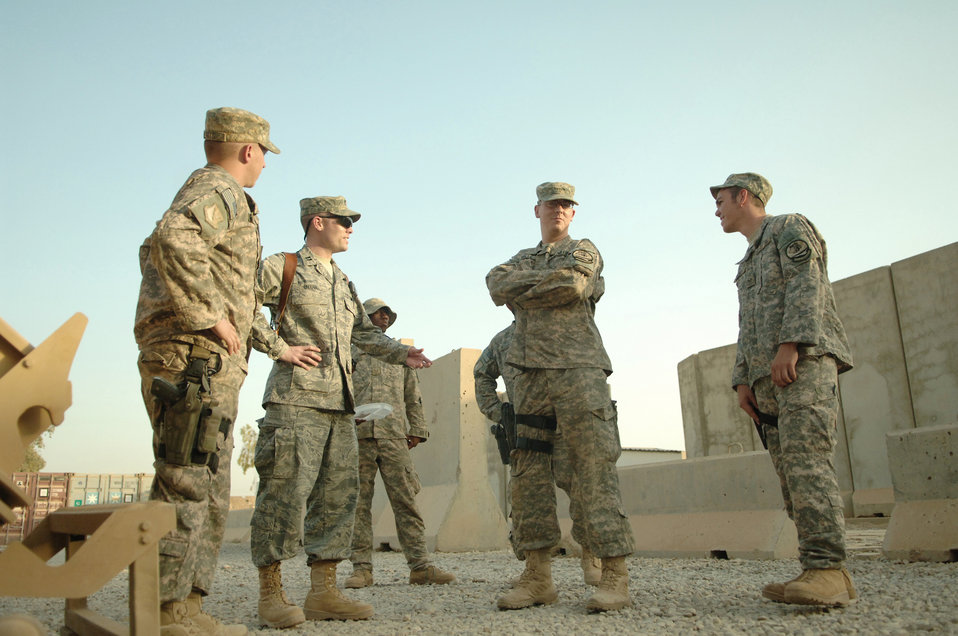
'Defender's Edge': A new approach to combat stress

Capt. Craig Bryan (second from left) briefs a group of 532nd Expeditionary Security Forces Squadron's quick reaction force Airmen prior to conducting a combat-stress therapy scenario Aug. 20 at Joint Base Balad, Iraq. Captain Bryan has worked with members of the 532nd ESFS, who conduct operations outside the wire, in an effort to improve their mental resiliency to combat-related stressors. Captain Bryan is the 332nd Expeditionary Aerospace Medicine Squadron traumatic brain injury clinic director.